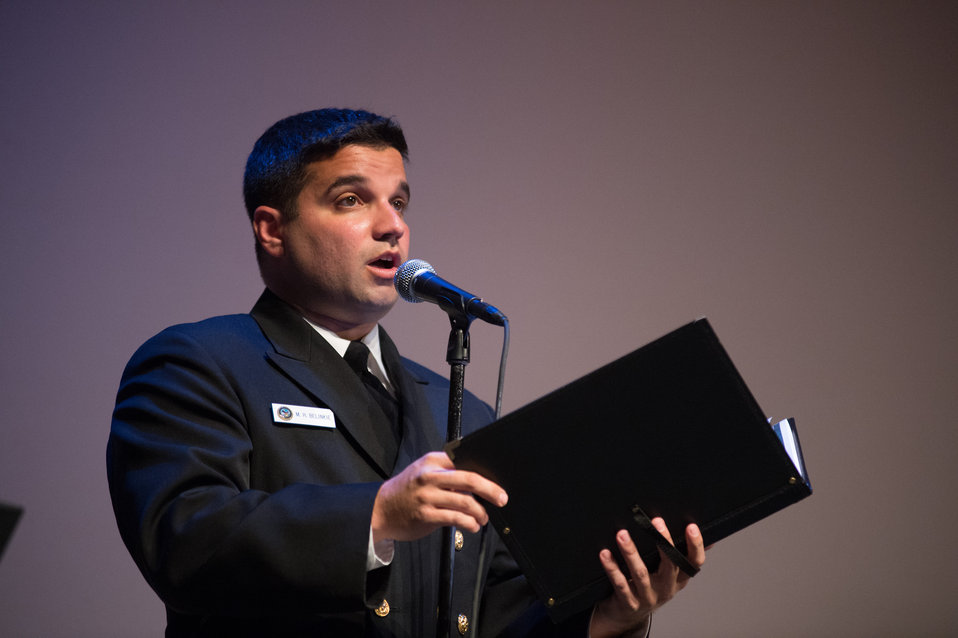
U.S. Navy Band Vocalist Michael Belinkie performances pieces, including Es Brent (It Burns) and Brundibar (The Lullaby), during the 2013 Federal Inter-Agency Holocaust Remembrance Day, at the Lincoln Theater, on Wednesday, April 17, 2013, in Washington, D.C. Since the 1979 President’s Commission on the Holocaust, an annual proclamation signed by the President of the United States recognizes the importance of remembering the atrocities of the Holocaust that should never be forgotten or be ignored.